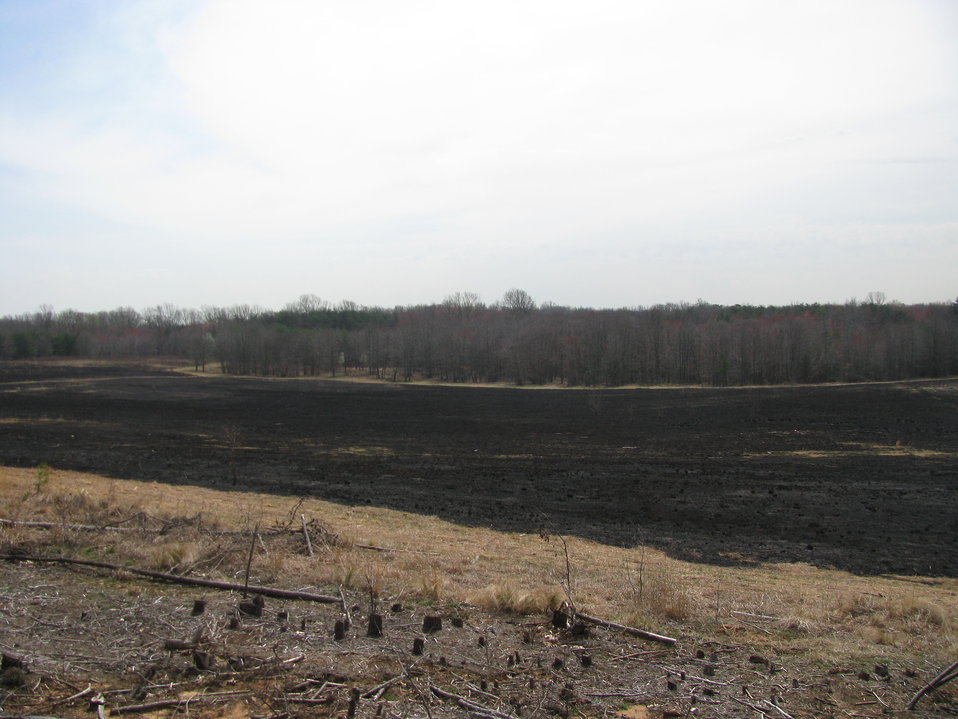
Successful Controlled Burn

Laurel, Maryland, April 15, 2012:
One day after a controlled burn shows how well the burn met objectives in consuming vegetation. The burn, at Patuxent Research Refuge, was to maintain native grasslands, remove woody vegetation, and control invasive species such as Korean Lespedeza.